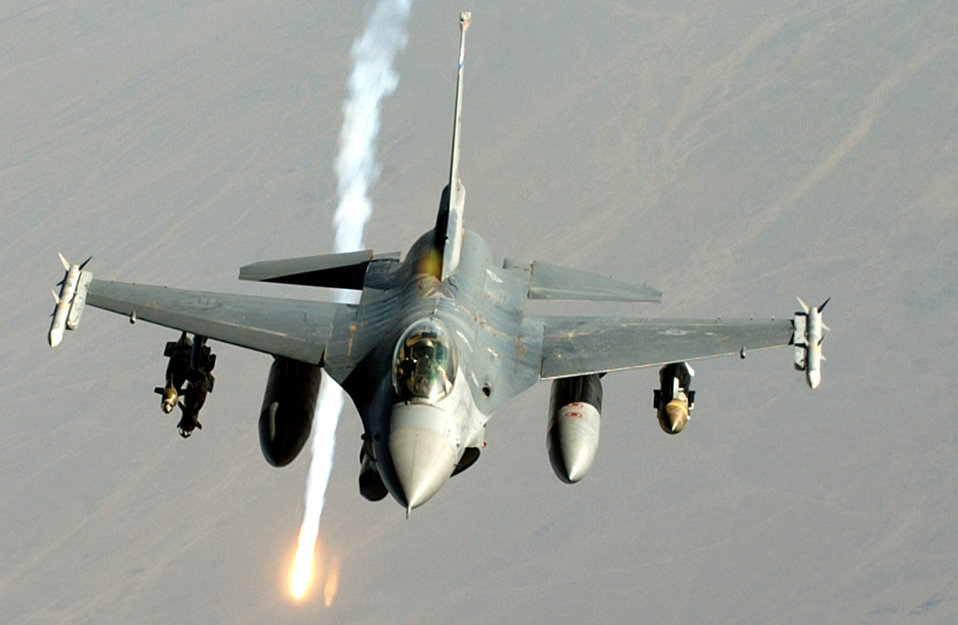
Combat mission

OVER IRAQ -- An F-16 Fighting Falcon dispenses a flare during a combat mission here July 23.